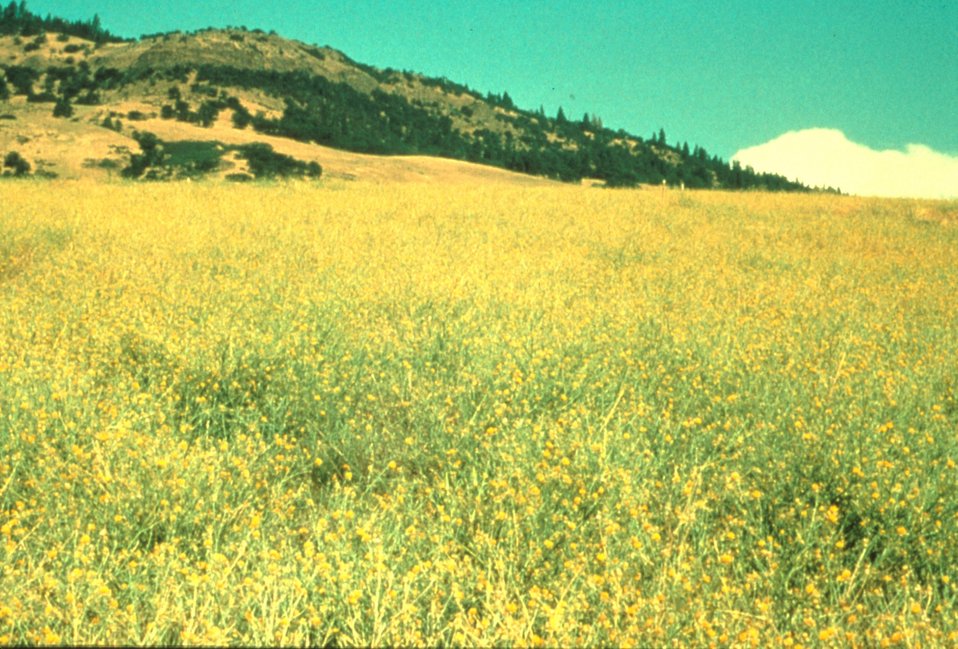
Native vegetation competing with Yellow Starthistle Idaho vegetation Plants in BLM